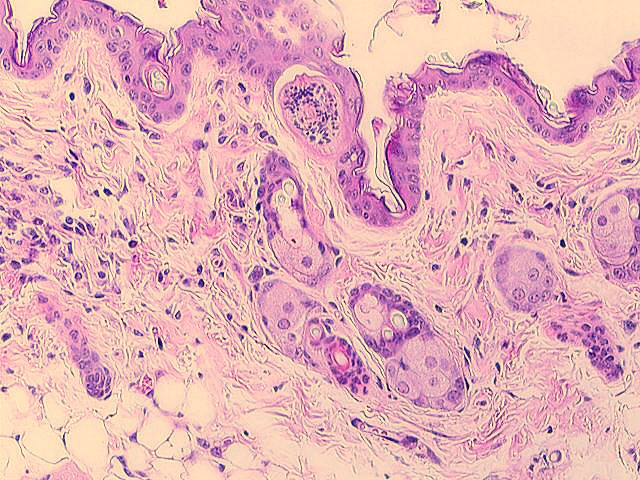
Schistosomulum in abdominal skin of a naive mouse.